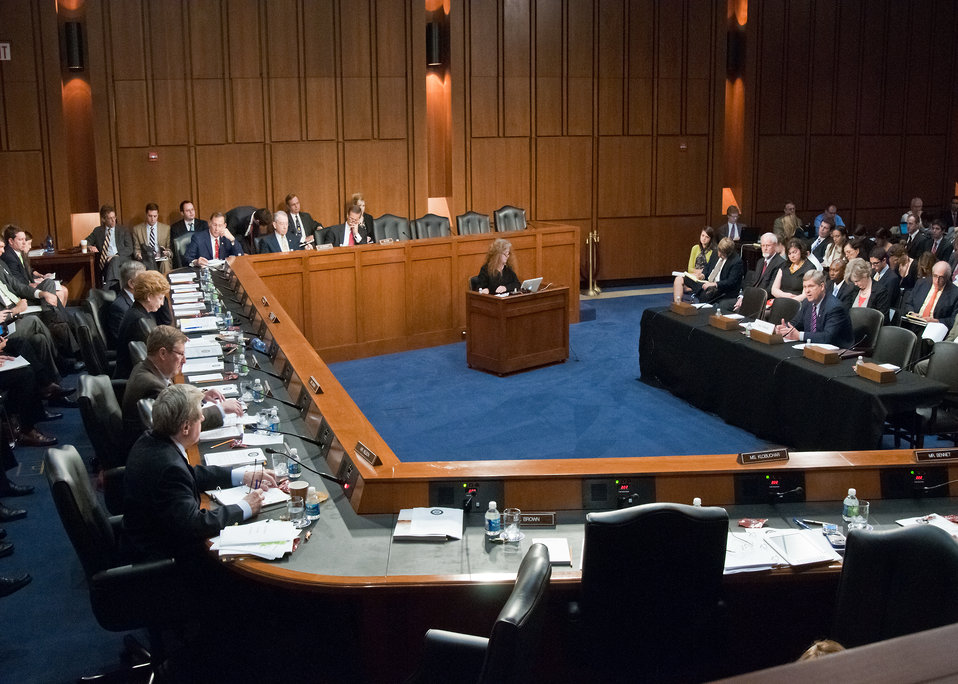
Agriculture Secretary Tom Vilsack spoke before the Senate Committee on Agriculture, Nutrition and Forestry in Washington, DC, Thursday, May 26, 2011. Secretary Vilsack stated that, “At USDA, we support farmers in both their domestic responsibilities and international role. Additionally, the Department seeks to conserve the nations natural resources, build thriving rural communities and ensure that every American has access to healthy, safe, affordable food.”